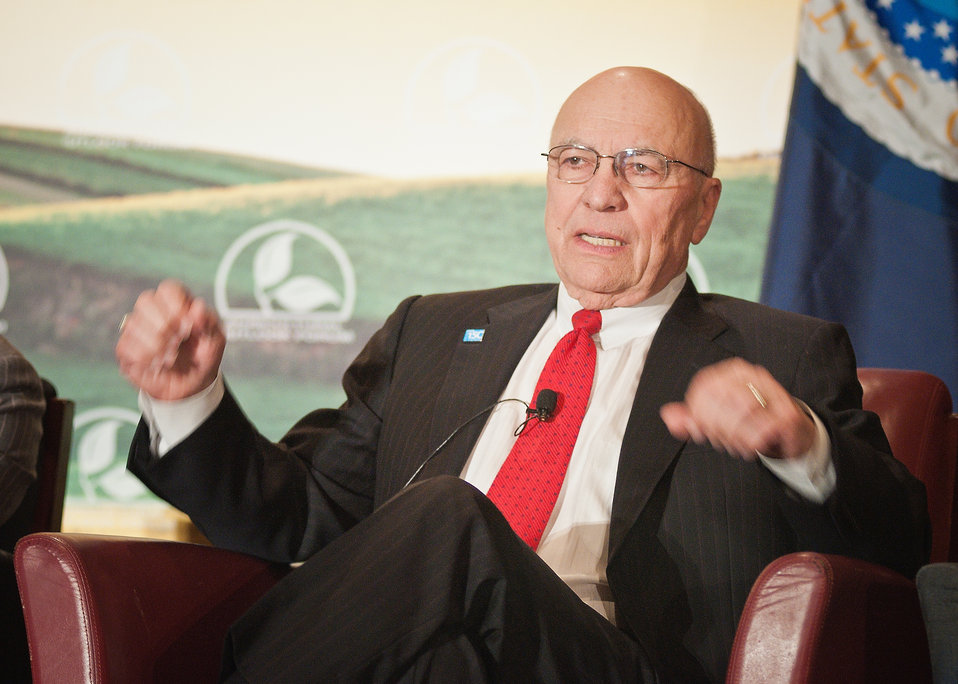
At the 2012 Agricultural Outlook Forum, “Moving Agriculture Forward” in Arlington, VA, held on Thursday, February 23, 2012, 7 former Secretaries of Agriculture sat on the plenary panel “Visions of the Future” hosted by current Agriculture Secretary Tom Vilsack. Clayton Yeutter speaks out during the panel discussions.